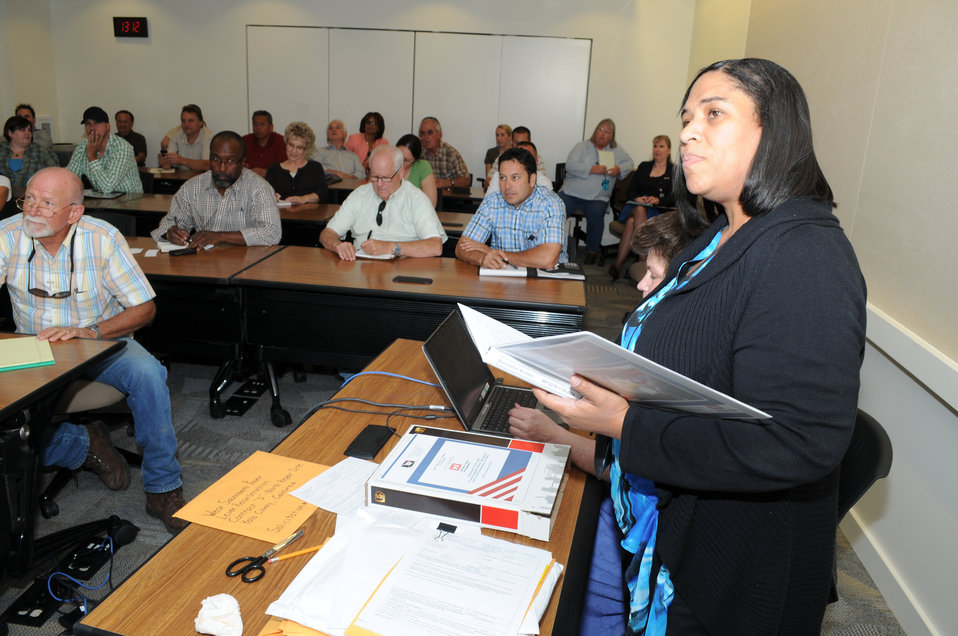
Small businesses bid for Corps levee repair contract

U.S. Army Corps of Engineers Sacramento District contract specialist Marsha Sells (right) opens and announces bids from local small businesses for a contract to repair a Yolo Bypass levee at the district headquarters building in Sacramento, Calif., June 9, 2011. The Sacramento District will oversee the levee repair work under its West Sacramento Project, a joint effort with the West Sacramento Area Flood Control Agency and the Central Valley Flood Protection Board to improve the levees surrounding West Sacramento, Calif. The contract is expected to be awarded June 16.